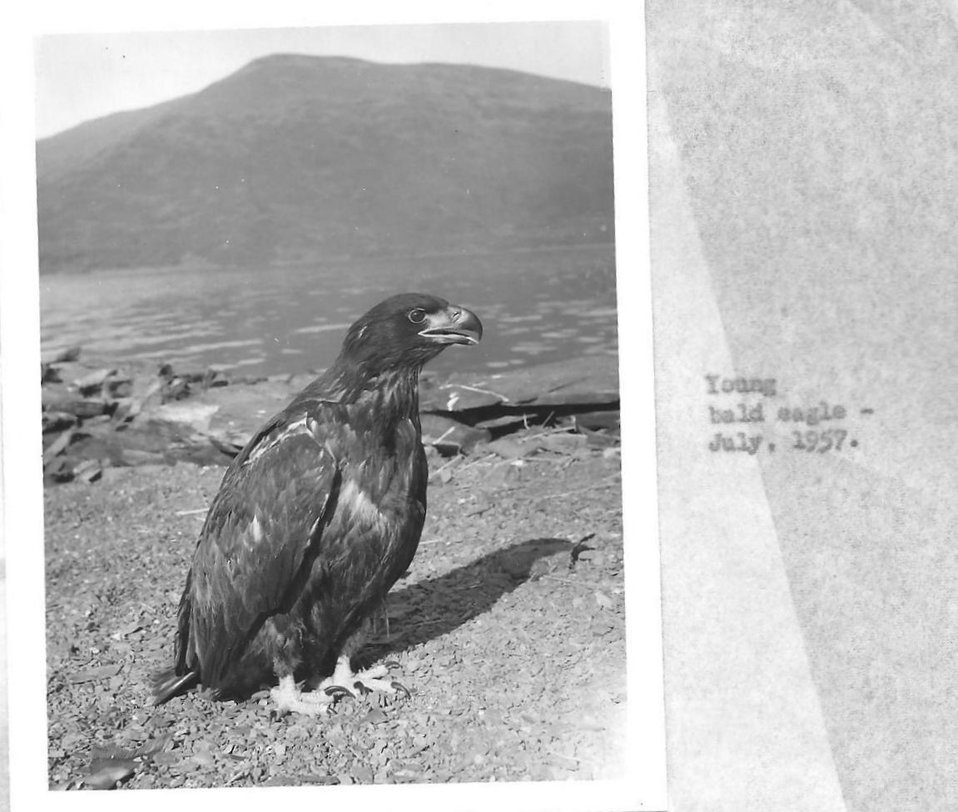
(1957) Young Bald Eagle

Credit: USFWS

Source and Contact: Kodiak National Wildlife Refuge